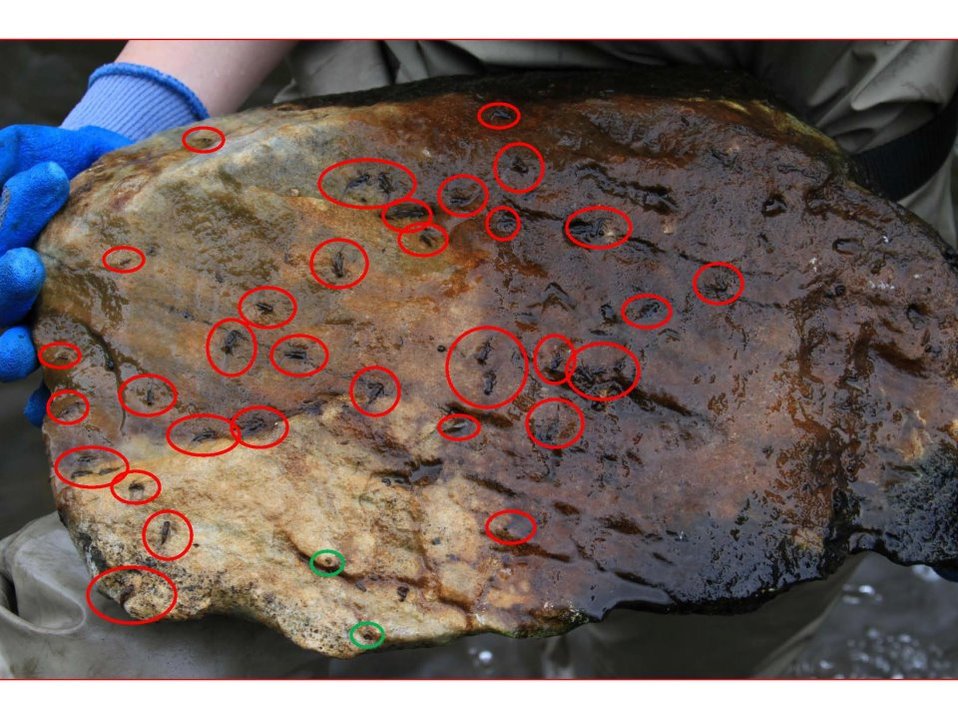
June 2012, Found some!

Successful find under this river rock. The red circles indicate the presence of tiny 'benthic' macroinvertebrates that live in the river sediment. The number of circles indicates that the river water quality has improved, if these tiny creatures are present it's a good sign.

low the river cleanup @ www.facebook.com/#!/USEPAHousatonic